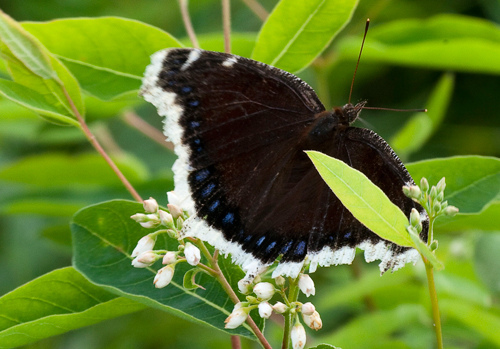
Mourning Cloak on Indian Hemp